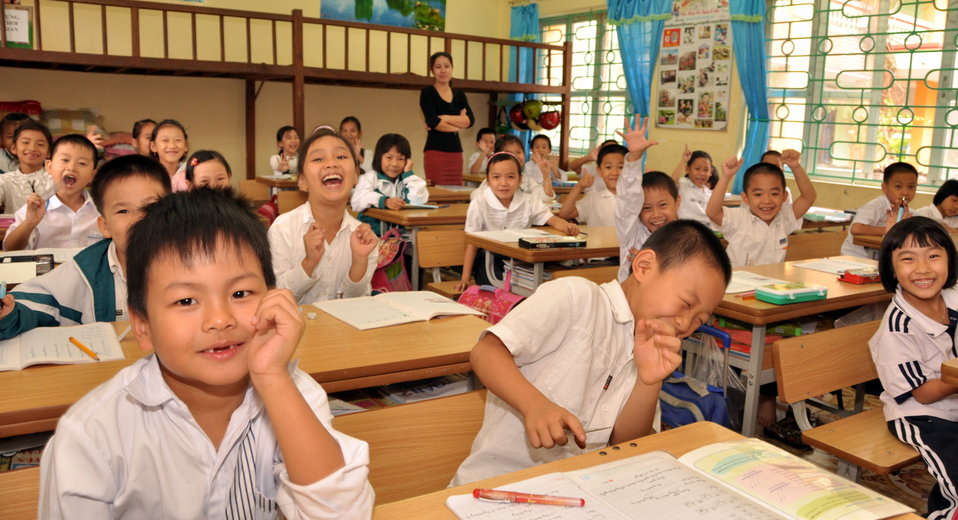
School children receive a dose of deworming medicine in Dien Bien

October 31, 2012